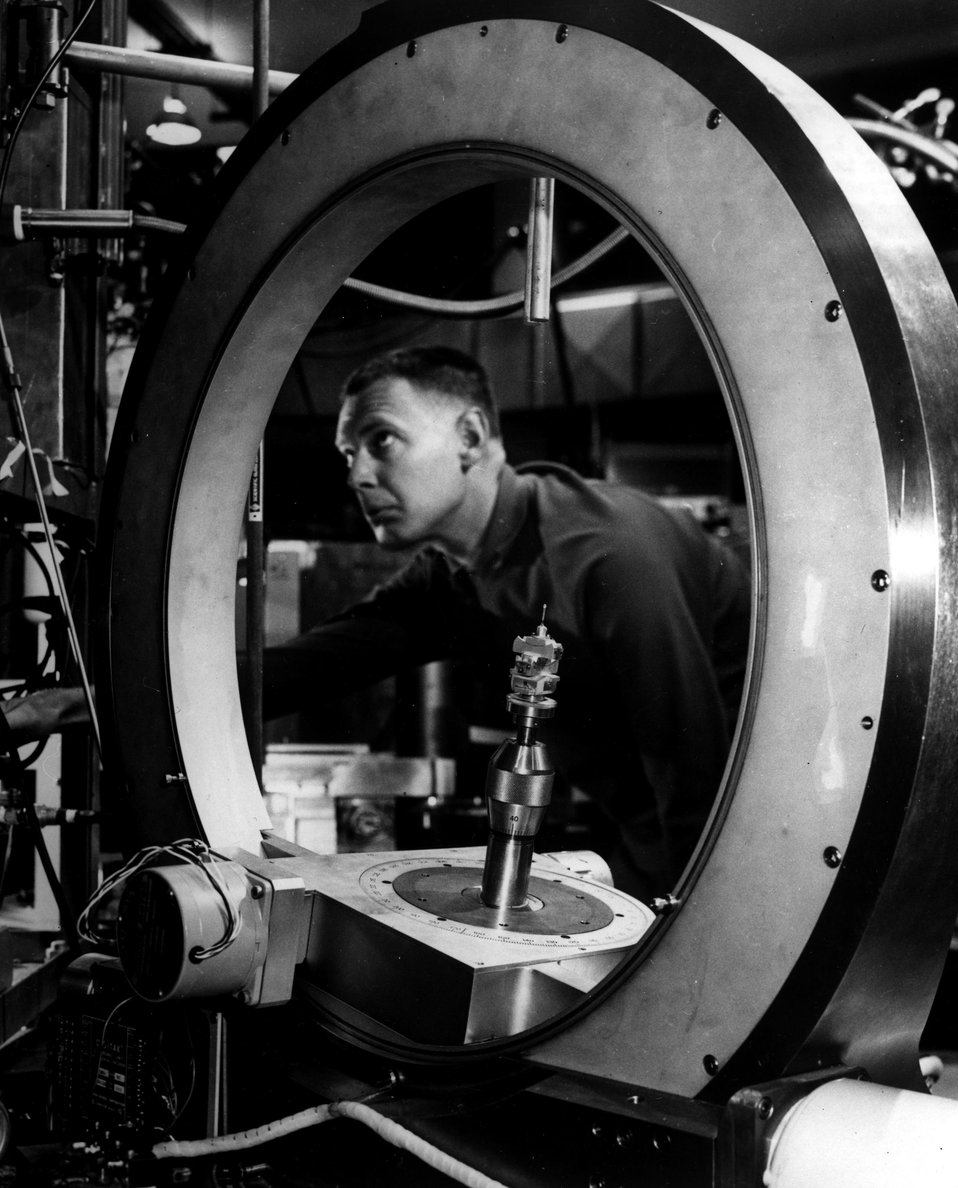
This single crystal gonicmeter is used for structural studies by neutron diffraction
at Brookhaven's High Flux Beam Research Reactor.